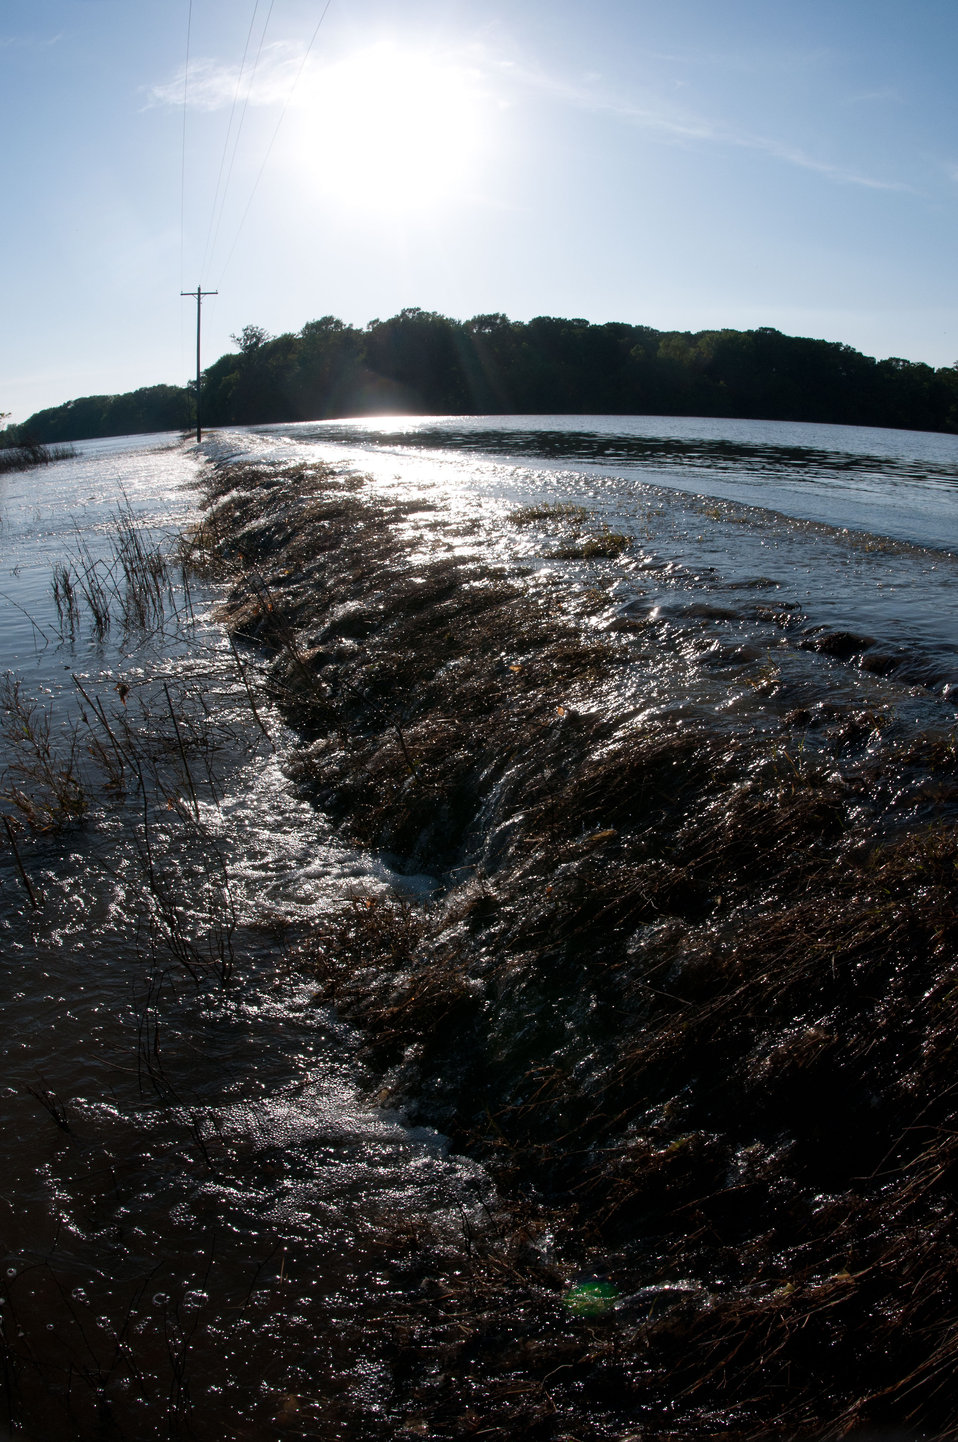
Receeding waters in Lauderdale County, TN begin to reveal widespread dead plants in agricultural region, on Saturday, May 21, 2011.